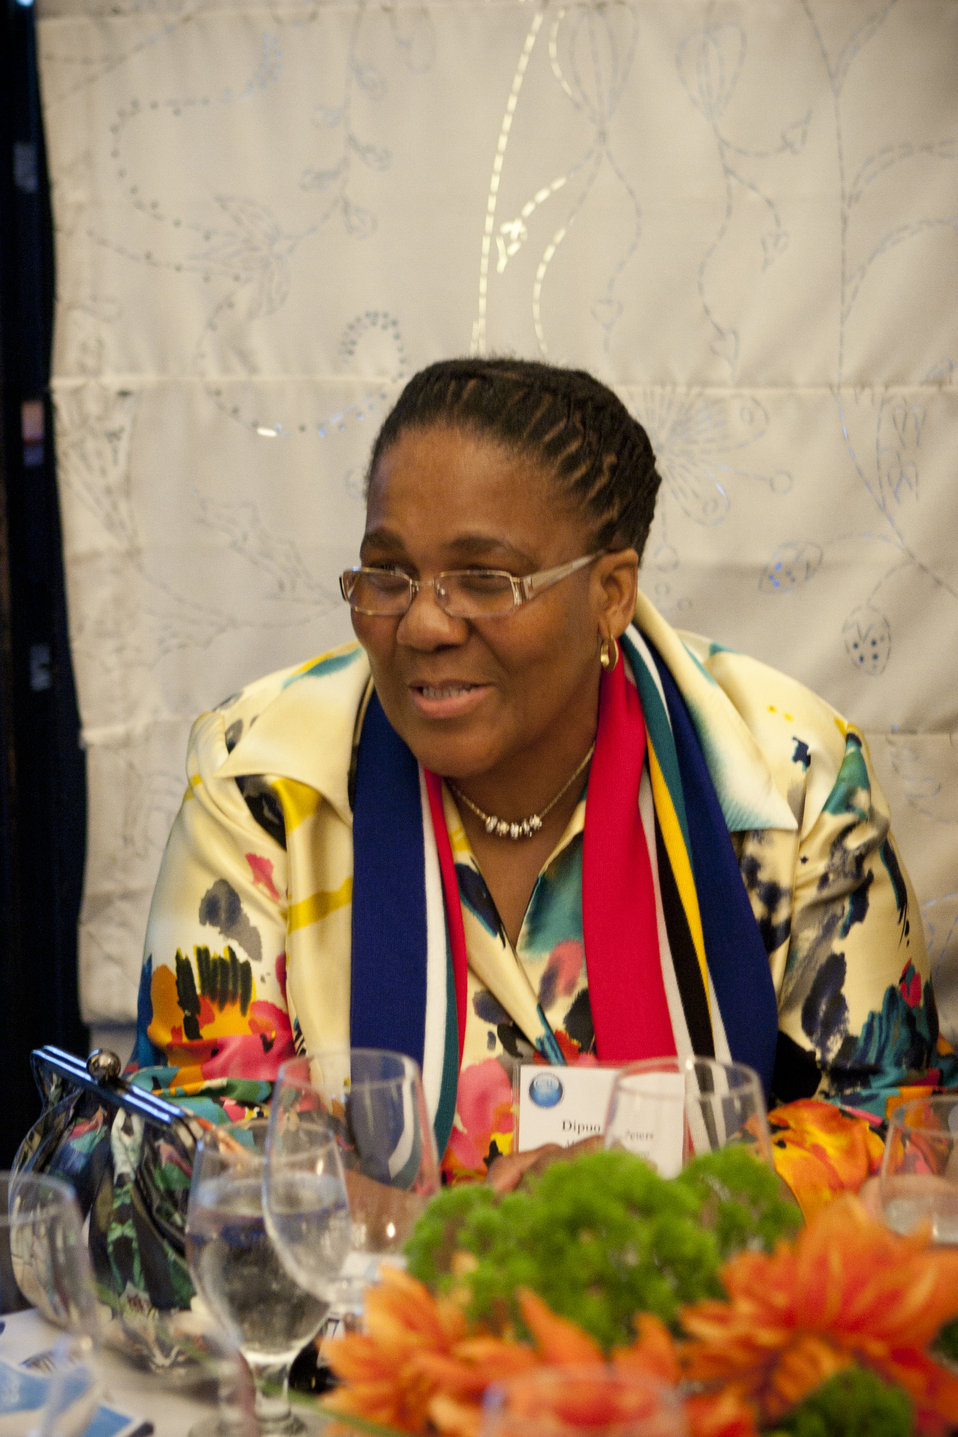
WomenandEnergy 57